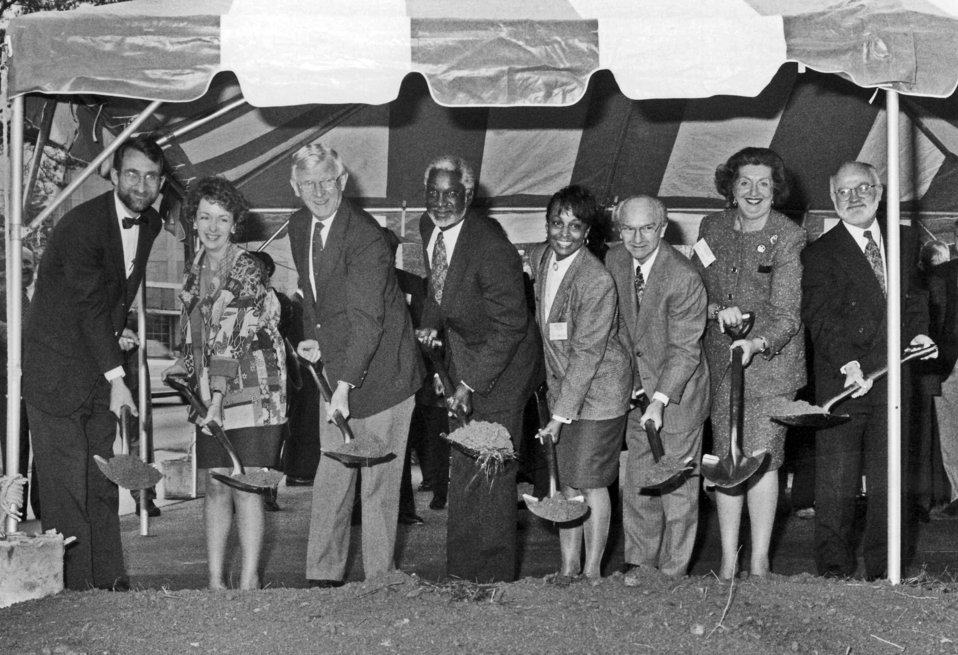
This early 1990s photograph showed individuals who took part in a ground-breaking ceremony for new construction on Centers for Disease Control's Atlanta, Georgia Roybal Campus.